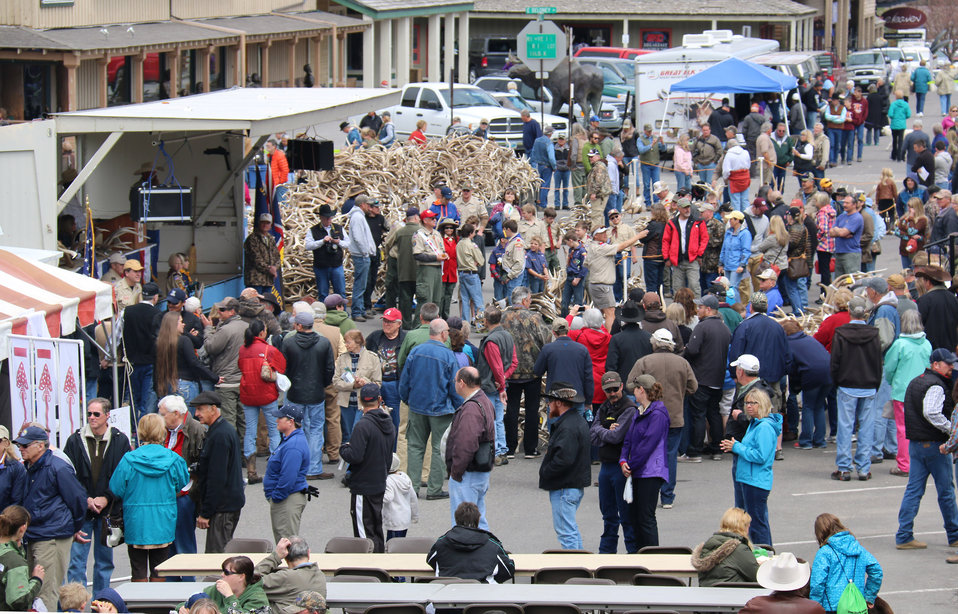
A Fun Event to Watch

Though only 120 - 140 people generally register to bid at the auction, the event draws a large group of spectators.